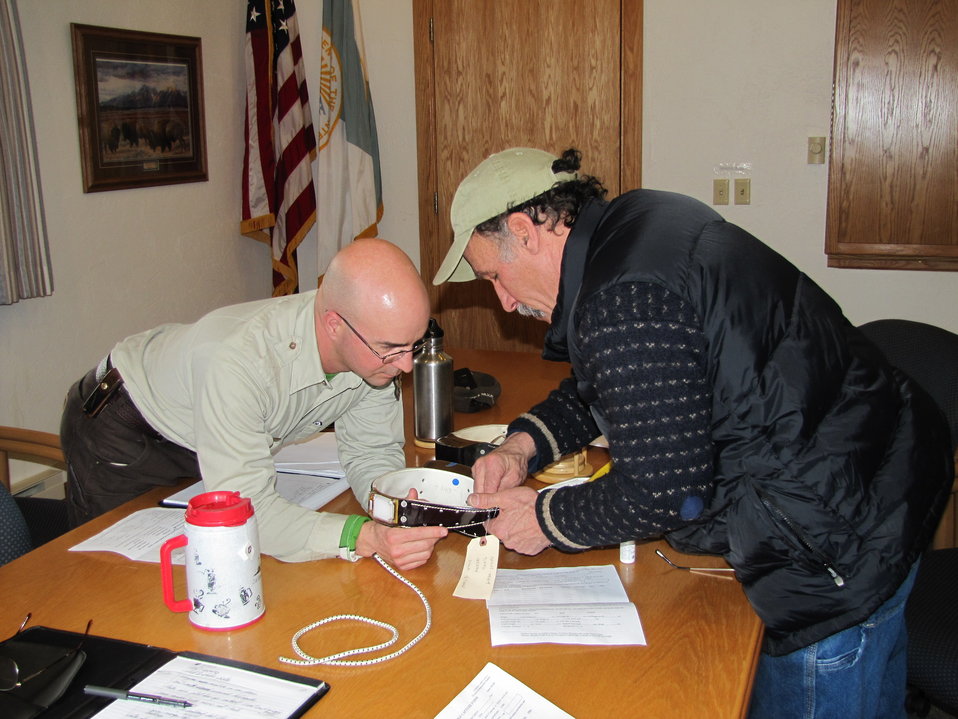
Pre-Planning

National Elk Refuge Biologist (left) and Northern Rockies Wolf Coordinator Mike Jimenez (right) discuss collaring procedures at the refuge administrative offices prior to the event.